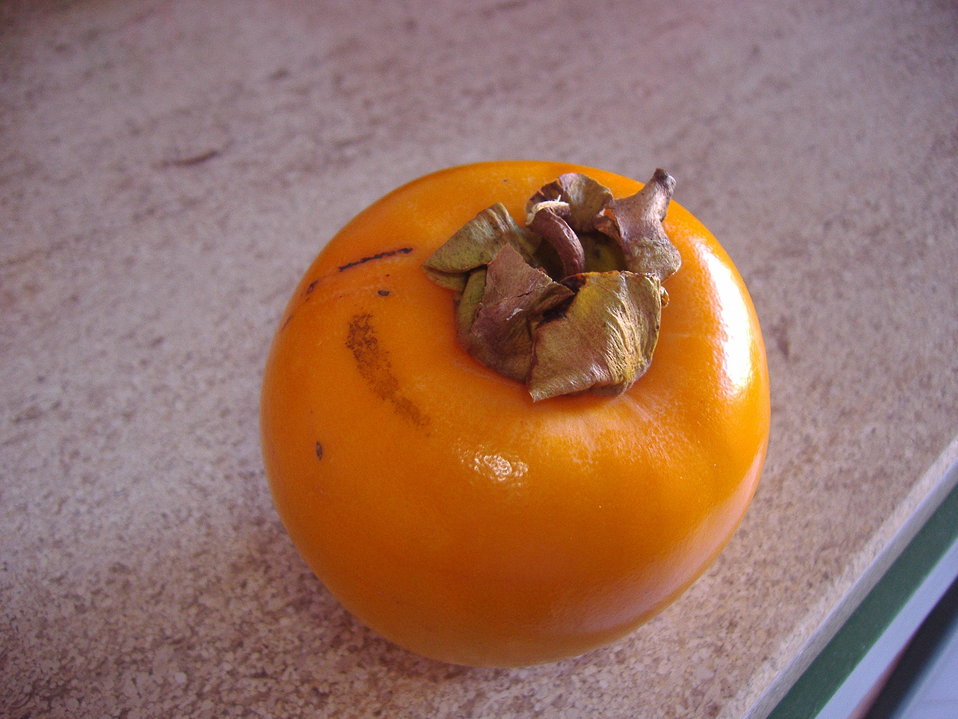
A Digital Photograph of a Persimmon fruit 26th November 2007 by Haydnaston